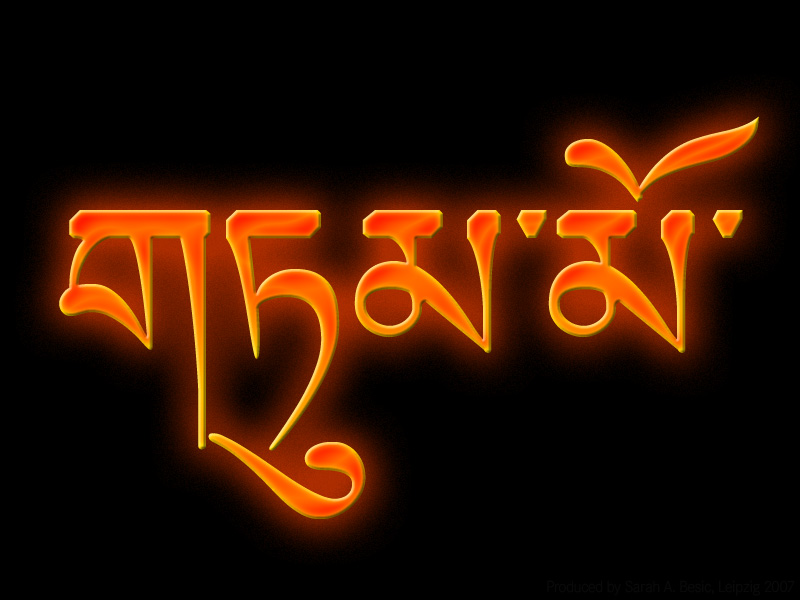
Deutsch: Typografische Darstellung des tibetischen Wortes Tumo (inneres Feuer)